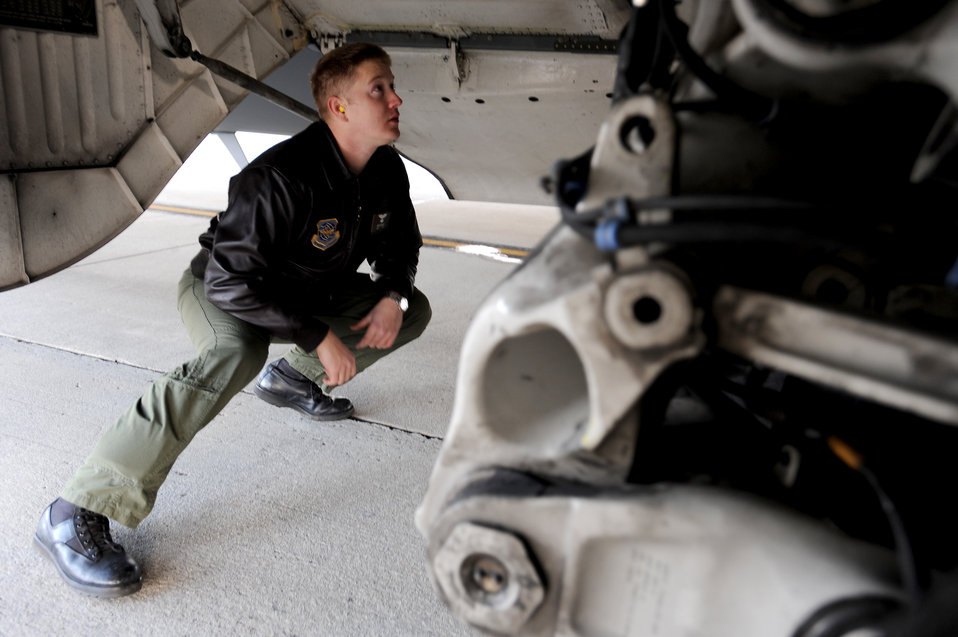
Charleston crew flies evaluation mission

Capt. Brad Bowyer inspects the landing gear of a C-17 Globemaster III at Joint Base Charleston, S.C., Feb. 4, 2010. Before each mission, the aircrew inspects aircraft maintenance documentation and performs a visual check of the aircraft to ensure it is ready for flight. Captain Bowyer is a pilot with the 17th Airlift Squadron.